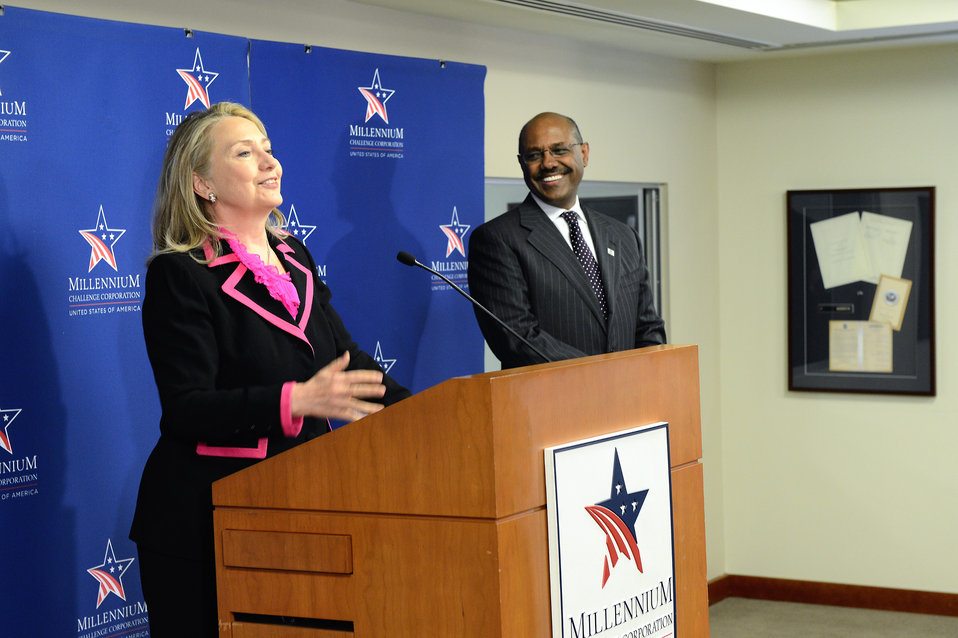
Secretary Clinton Delivers Remarks to the Millennium Challenge Corporation

U.S. Secretary of State Hillary Rodham Clinton delivers remarks to the Millennium Challenge Corporation in Washington, D.C., November 27, 2012.